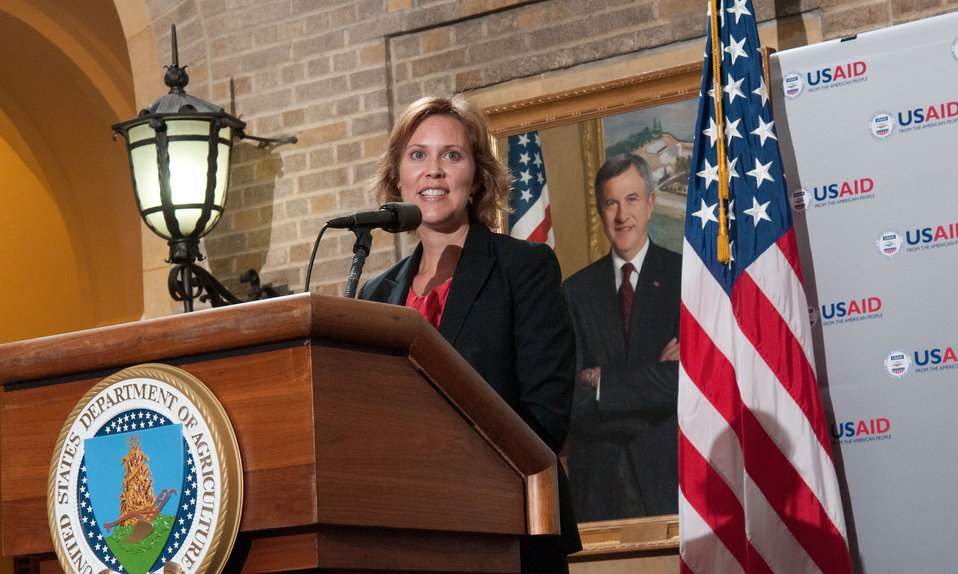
Agriculture Deputy Under Secretary for Farm and Foreign Agricultural Services Darci Vetter spoke at the Iftar event, co-sponsored by the Iftar celebration, co-sponsored by the U.S. Department of Agriculture, U.S. Agency for International Development (USAID) and Islamic Relief USA, on Tuesday, August 7, 2012, in the USDA Whitten Building, in Washington, D.C. Ramadan is the month of fasting, intensive prayer, sacrifice and worship for Muslims around the world. Throughout this month, Muslims fast during the day, abstaining from consuming food from dawn to dusk and using this time to purify spiritually. Fasting reminds Muslims of the poverty and hunger suffered by many in the United States and worldwide. It is a connection with those who are hungry not through devotion, but through the many global factors that lead to hunger and famine. Iftar is the meal at which Muslims break their fast at sunset, usually by eating dates, according to the Prophetic tradition.